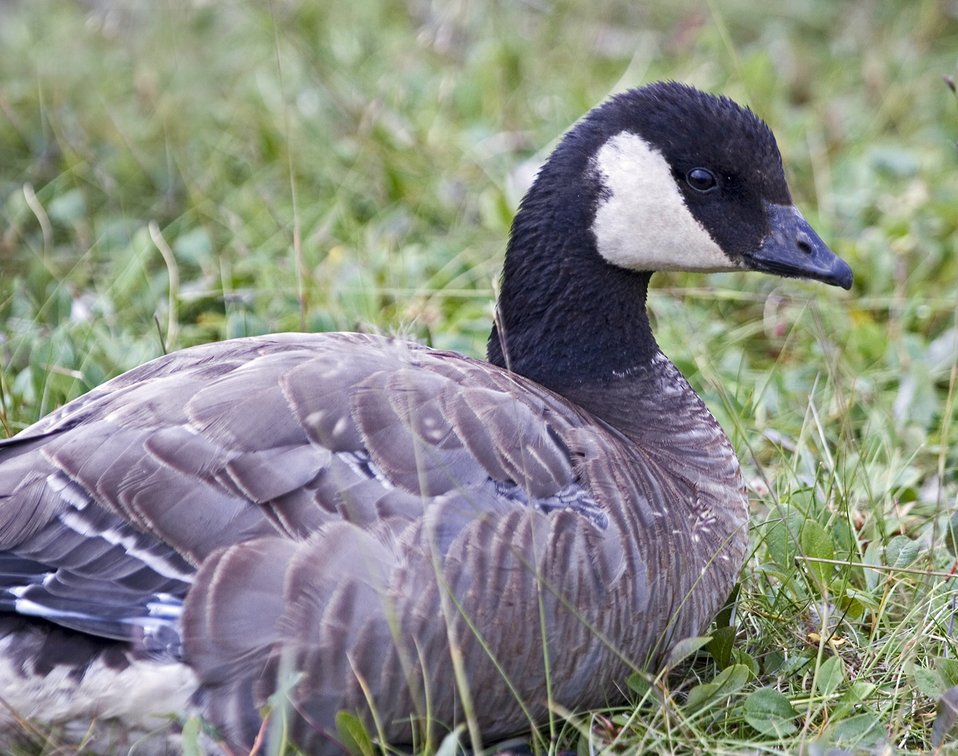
Cackling Canada goose

Close up of a cackling Canada goose.